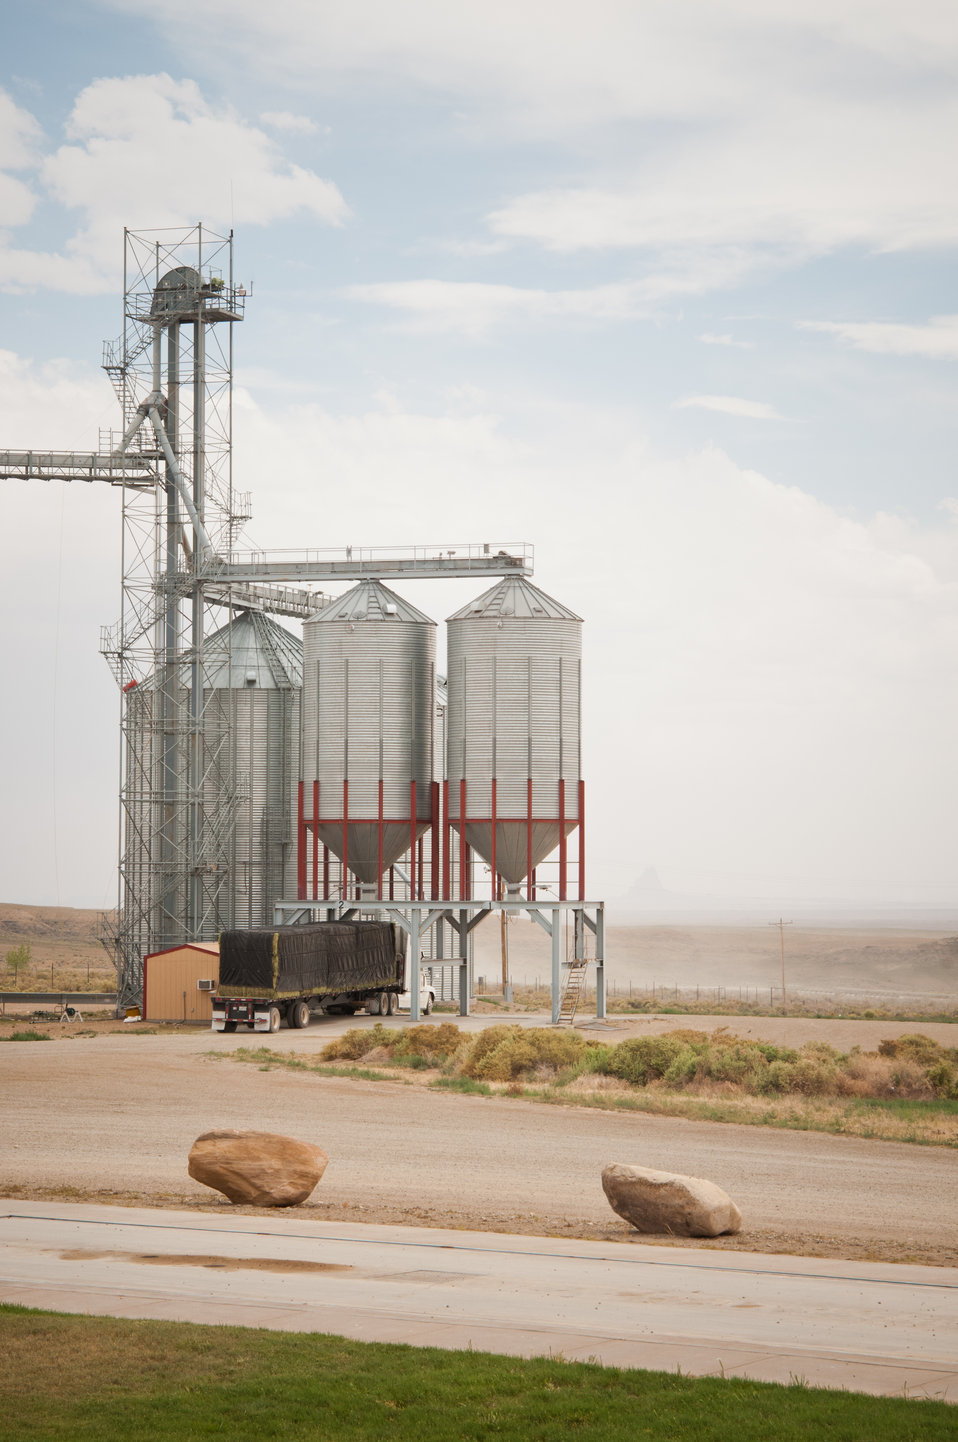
With a grant from the U.S. Department of Agriculture’s (USDA) Rural Development (RD) agency the Ute Mountain Ute Tribe Farm and Ranch Enterprise will be able to use state of the art equipment and modern technology to successfully operate a market-oriented agricultural enterprise. The farm is a 7,770 acre modern irrigated agricultural project producing alfalfa, field corn, wheat, sunflower seed and livestock in the shadow of Sleeping Ute Mountain in Towaoc, CO. The funding will also enable the tribe to maximize successful commercial ventures, develop a network of potential customers and provide skilled, year-round employment.